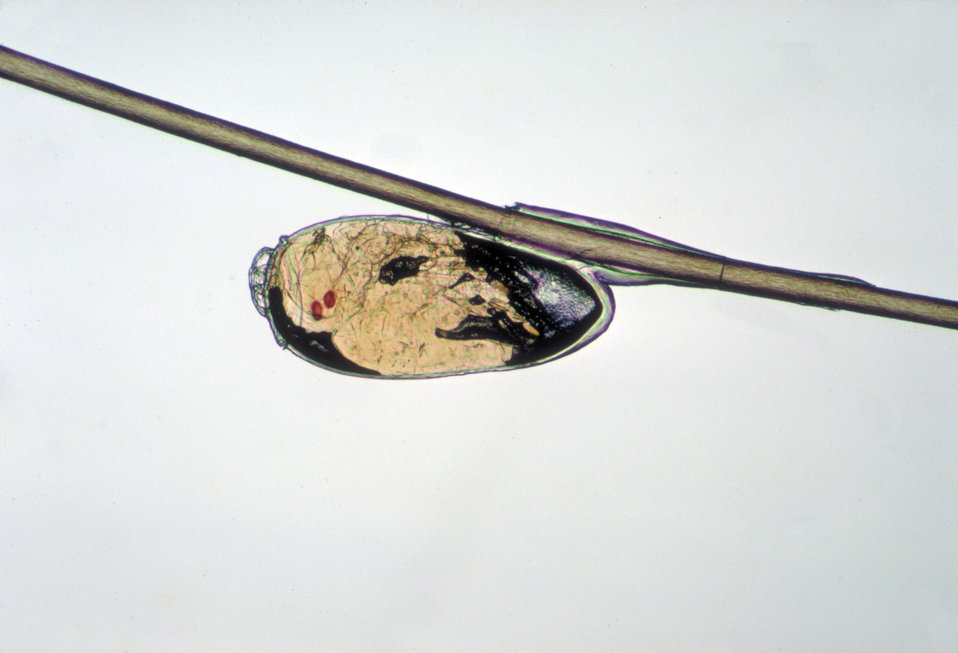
Unhatched nit of a head louse, Pediculus humanus var capitis parasite.